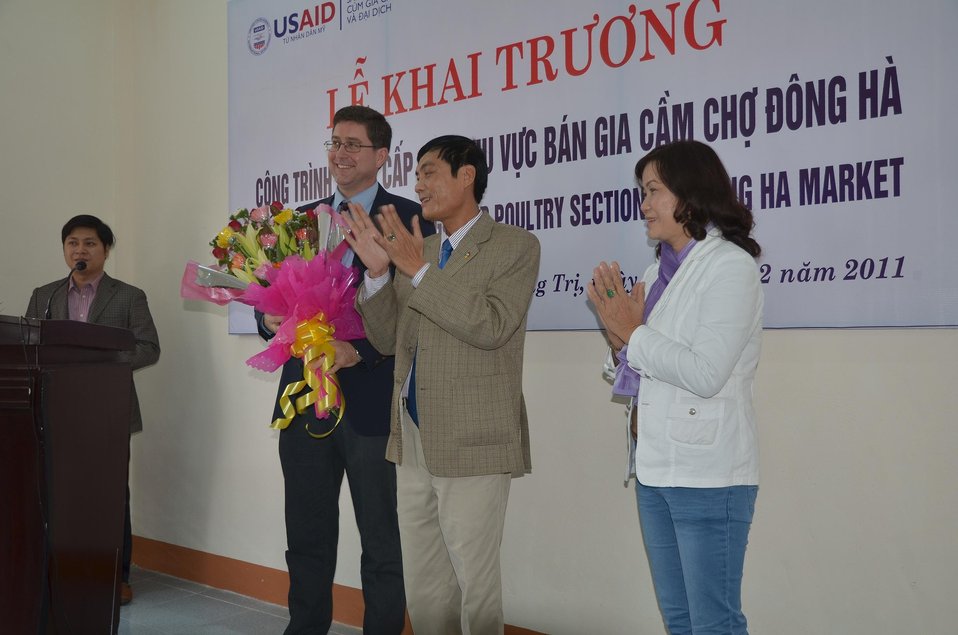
Disease Risk Reduction in Dong Ha Poultry Market, Quang Tri

Photo by Jens Peter Dalsgaard/USAID's Avian and Pandemic Influenza Initiative project team; December 5, 2011